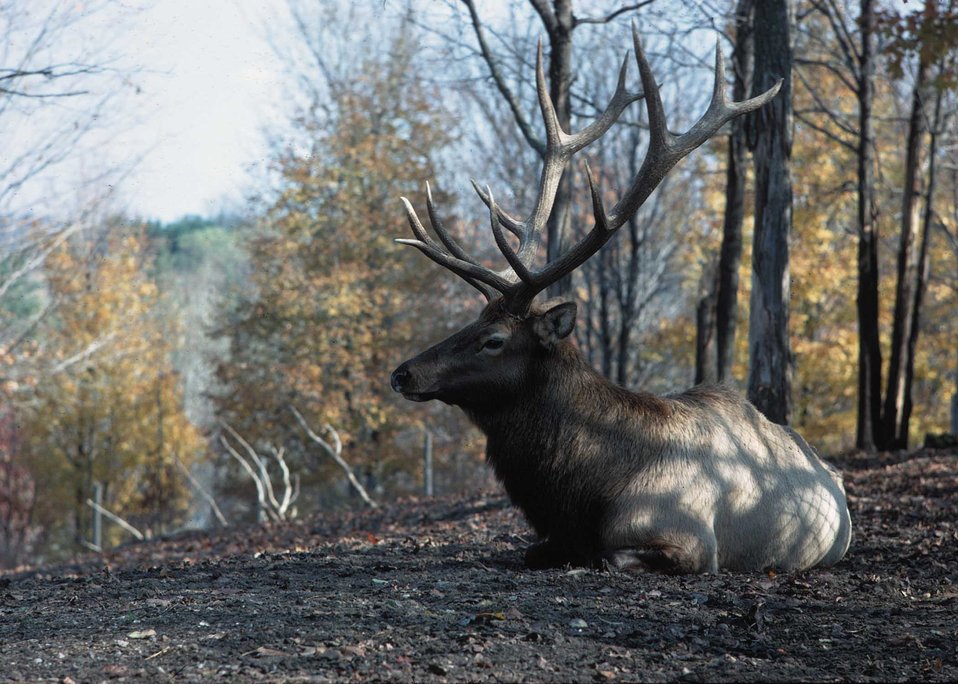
An elk at rest.